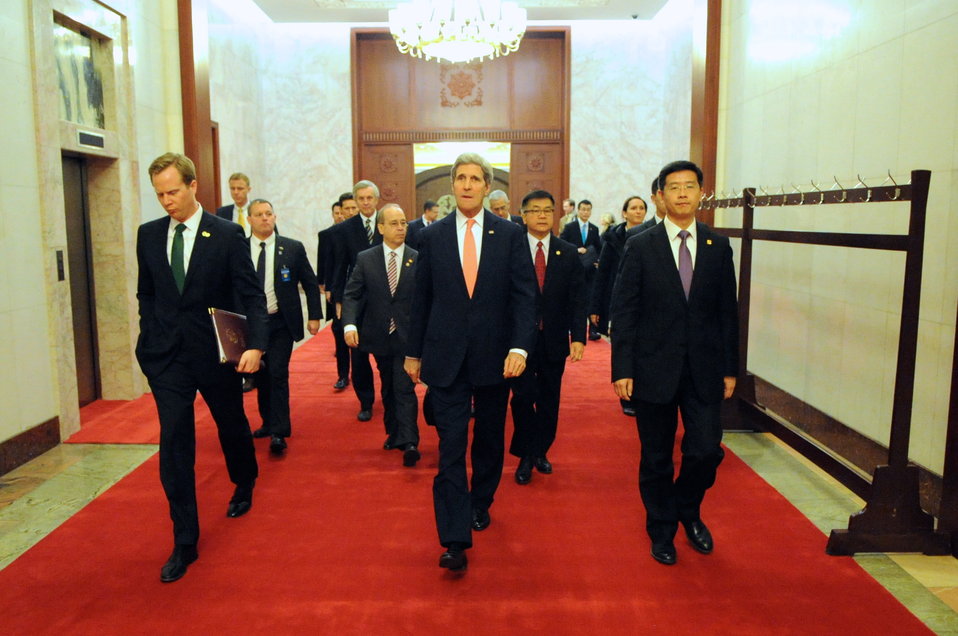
Secretary Kerry Walks Through Beijing's Great Hall of the People

U.S. Secretary of State John Kerry walks through Beijing's Great Hall of the People en route to a meeting with Chinese President Xi Jinping in Beijing, China on February 14, 2014.